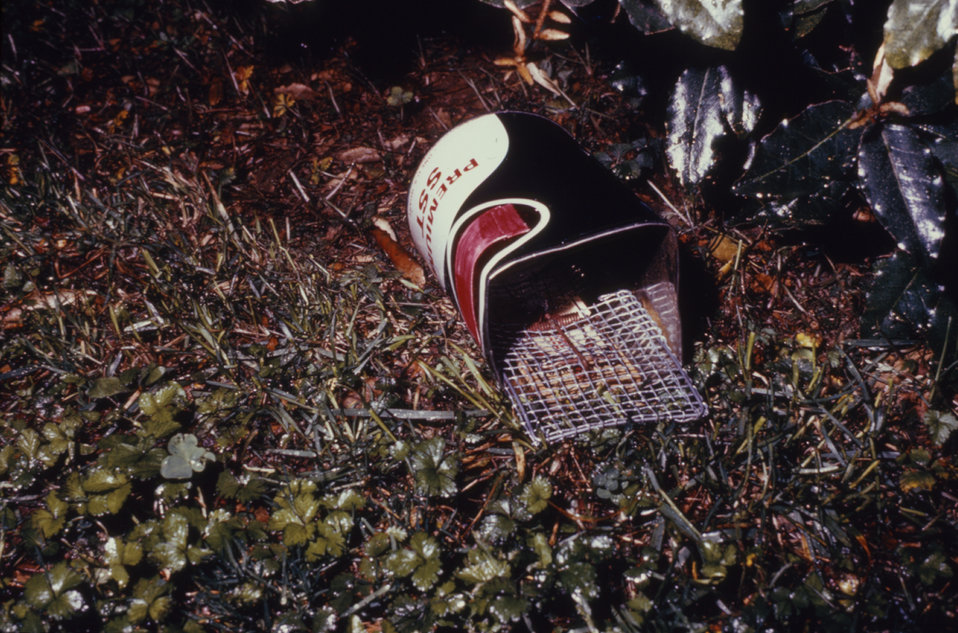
This was a home-made animal trap made out of an oil can, which was used to trap mice in an arbovirus study.